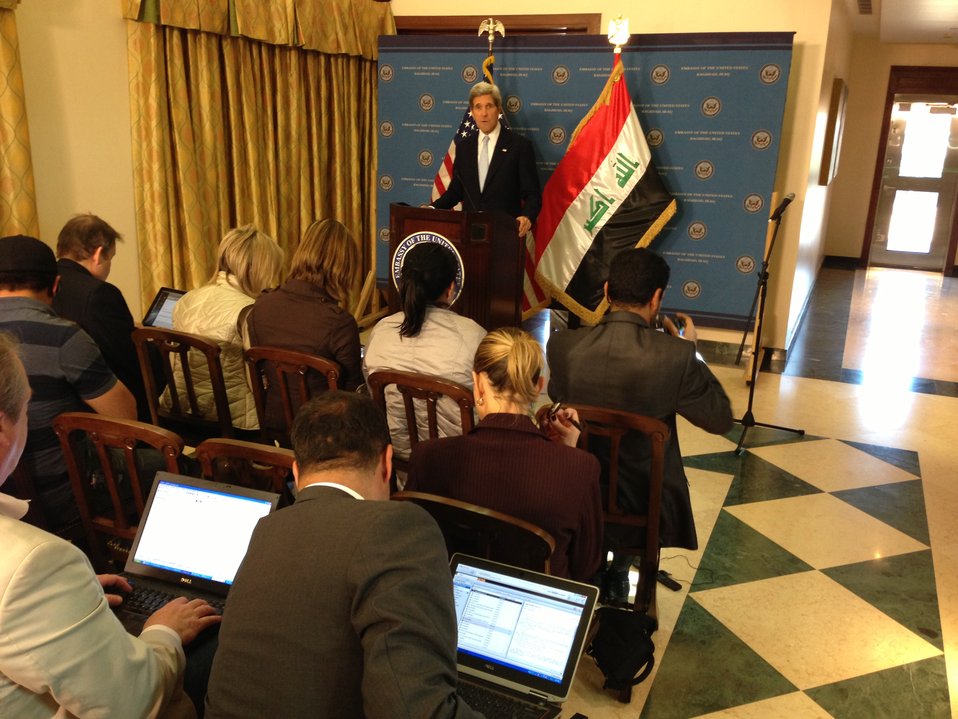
Secretary Kerry Delivers Remarks to the Media

U.S. Secretary of State John Kerry delivers remarks to the media while in Baghdad, Iraq on March 24, 2013.